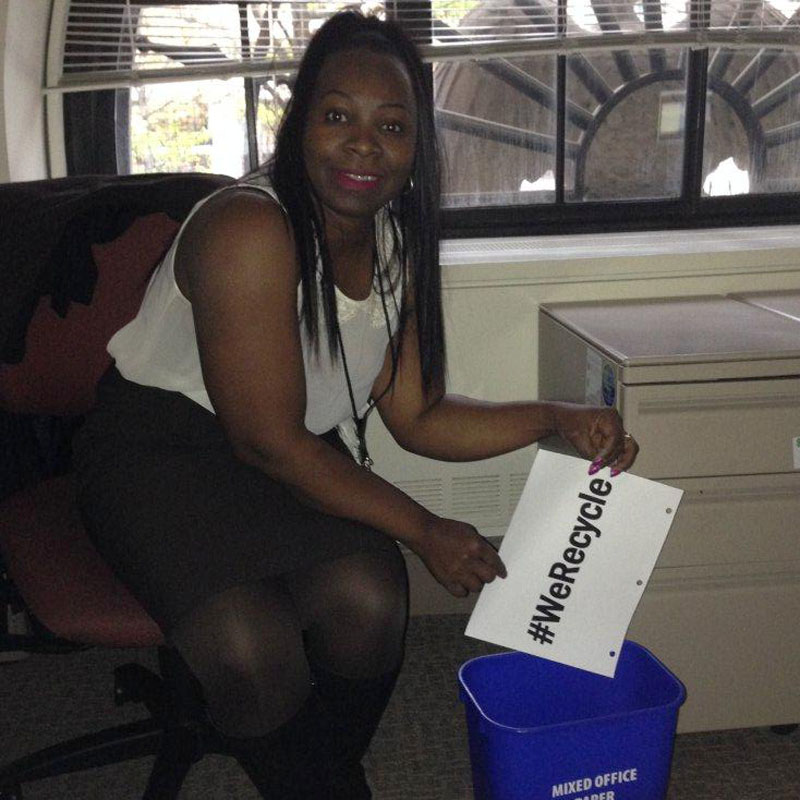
EPA Employee Salimatou Recycles

At EPA, #WeRecycle. Learn how you can too: www2.epa.gov/recycle